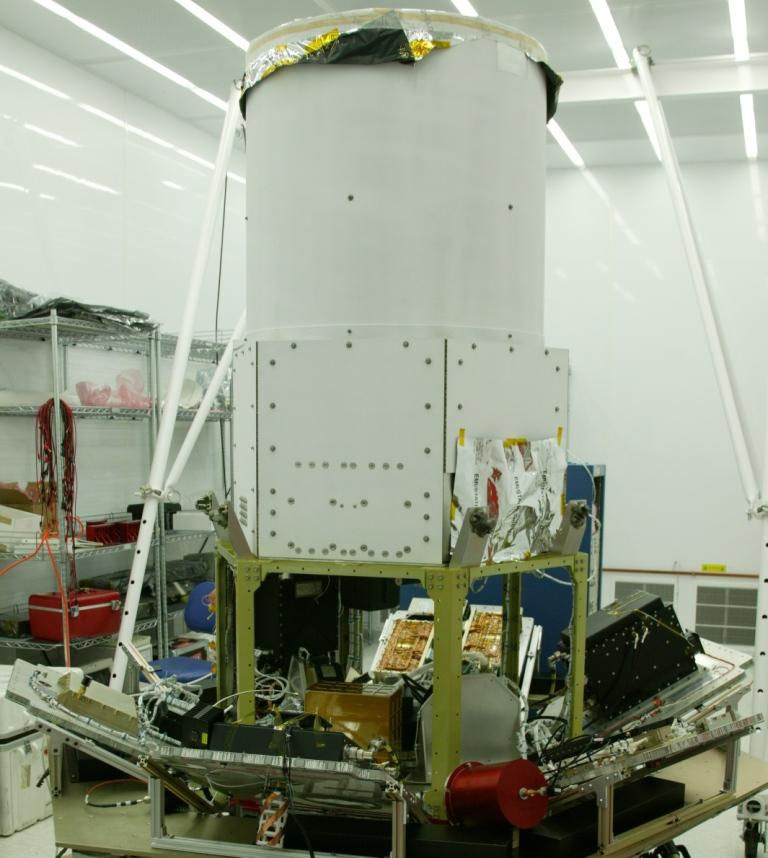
Technical issues, more tests delay satellite's liftoff

Integration of the modular bus components on Tactical Satellite-3 is photographed at the Air Force Research Laboratory's Space Vehicles Directorate, located at Kirtland Air Force Base, N.M.